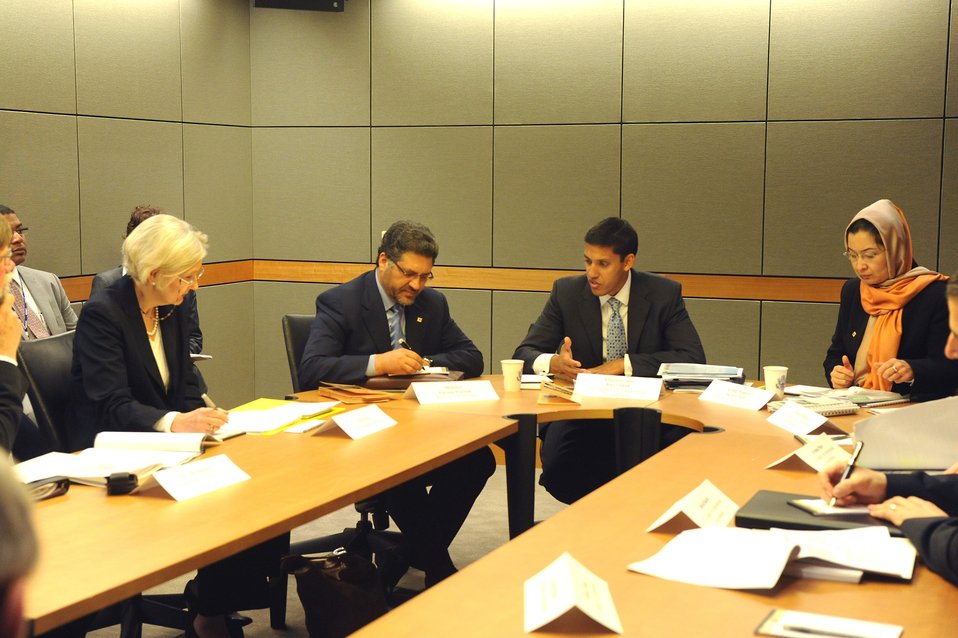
Human Resources Development Interagency Working Group Session of the U.S.-Afghanistan Strategic Partnership Dialogue

USAID Administrator Dr. Rajiv Shah, Afghan Education Minister Farooq Wardak, and Afghan Acting Public Health Minister discuss issues during the Human Resources Development Interagency Working Group Session of the U.S.-Afghanistan Strategic Partnership Dialogue at the U.S. Department of State, Washington, D.C., May 11, 2010.